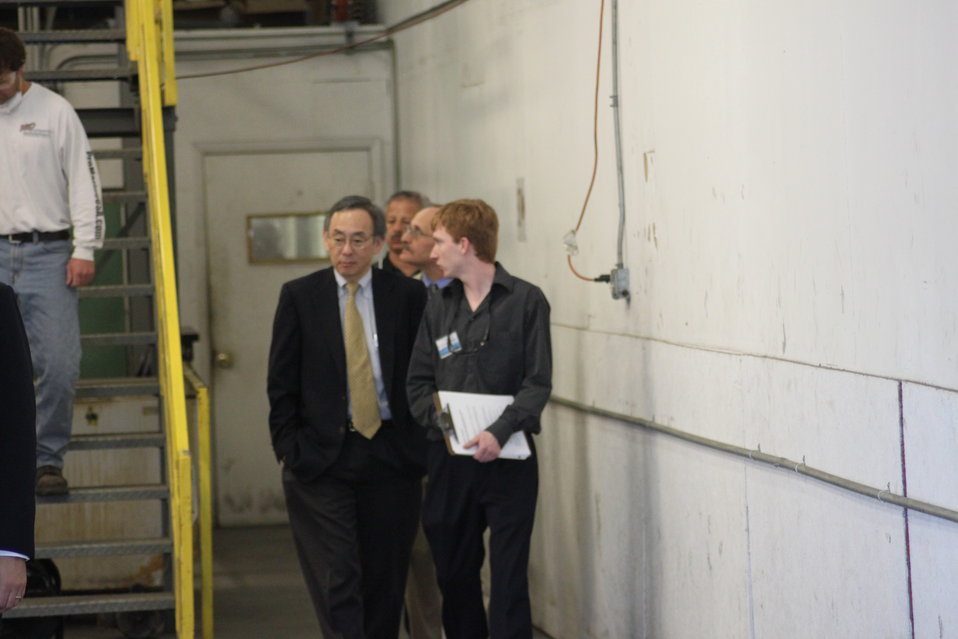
Norm 005